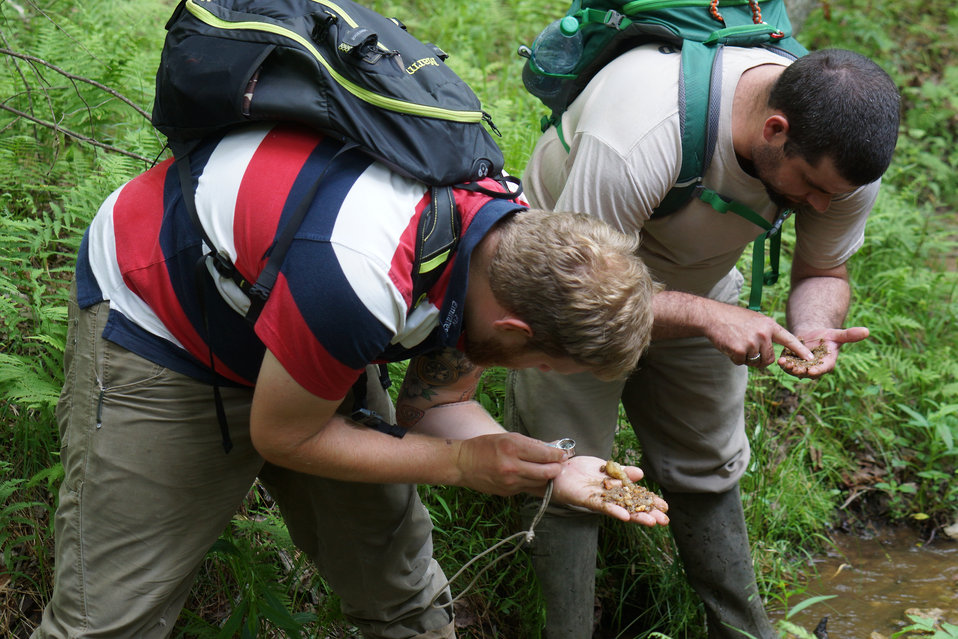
Clint DeWitt and David Caldwell

In May, bog conservationists from Tennessee, North Carolina, and Georgia convened in the north Georgia mountains for the spring, 2014 meeting of the Bog Learning Network. The event provided an opportunity for biologists to see, first hand, the result of management efforts at two north Georgia bogs. More importantly, the outings provided an opportunity to share innovative approaches to bog management, such as the role of the Georgia Plant Conservation Alliance in conserving rare plants and coordinating a cadre of volunteers to work on bog management.

The Bog Learning Network was convened in the winter of 2013 as a way to bring together people working for bog conservation across the Southern Appalachians. Southern Appalachian bogs are one of North America’s rarest habitats and home to many rare plants and animals.